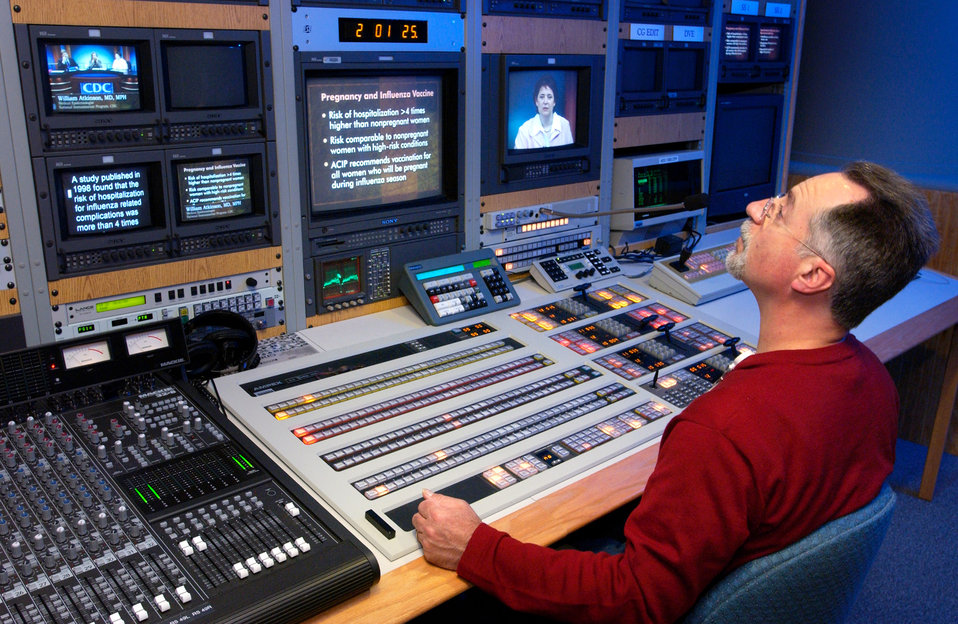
This 2004 photograph showed Division of Creative Services (DCS), Senior Editor/Technical Director Lee Bookman, at work in the CDC's broadcast control room during a live broadcast.